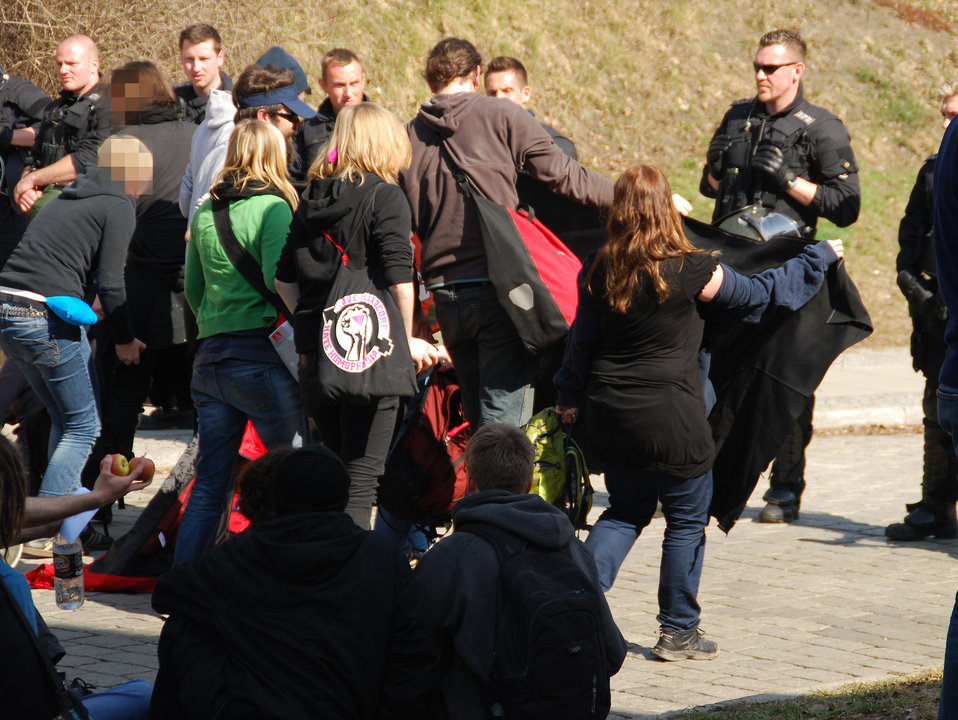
Proteste gegen den Nazi-Aufmarsch am 24.3.2012 in Frankfurt (Oder)